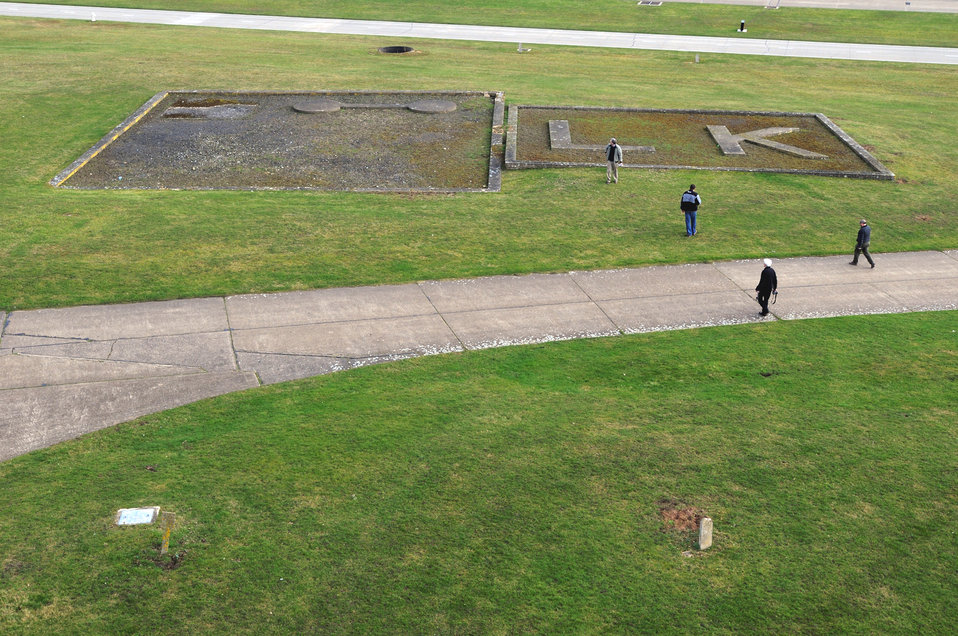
Leakenheath tower falling down

A team of historians walks out to World War II airfield marker at Royal Air Force Lakenheath, England, Feb. 27. The marker sits in front of an old air traffic control tower which is scheduled to be demolished. Although the team was visiting to document the tower, they took the opportunity to study other historical structures as well. During the war, when hundreds of aircraft were flying over the airfields of East Anglia, pilots could look down and see these markers,